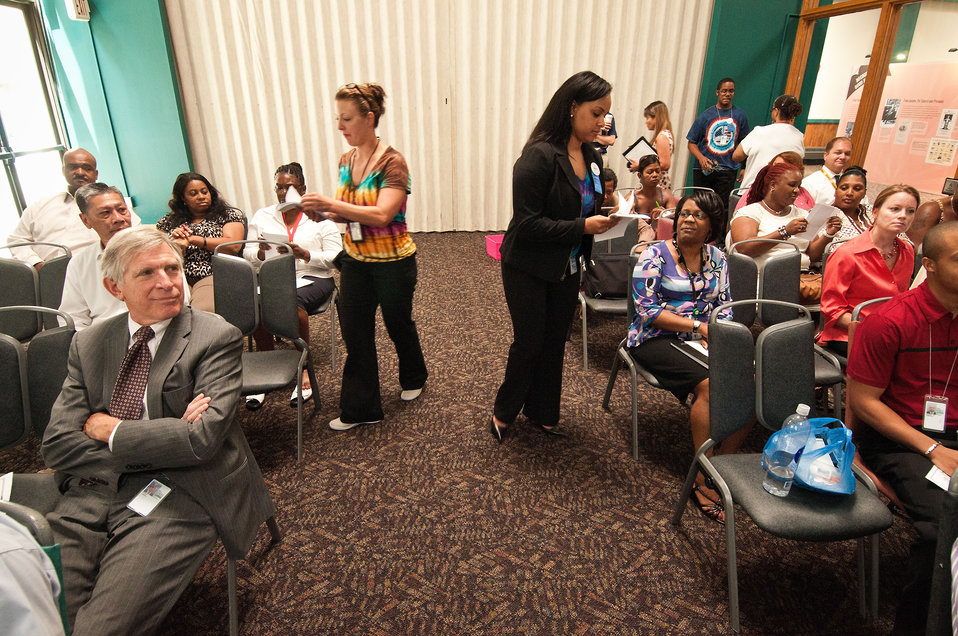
Human Resources Policy Branch Chief Leslie McBroom (left) and Christopher Newport University, Newport News, VA intern Winta Tewolde (right) distribute questionnaires associated with the tele-work procedures to employees during one of the many forums held for the Rural Development Cultural Transformation Day event held in Washington, D.C. on Thursday on July 12, 2012.